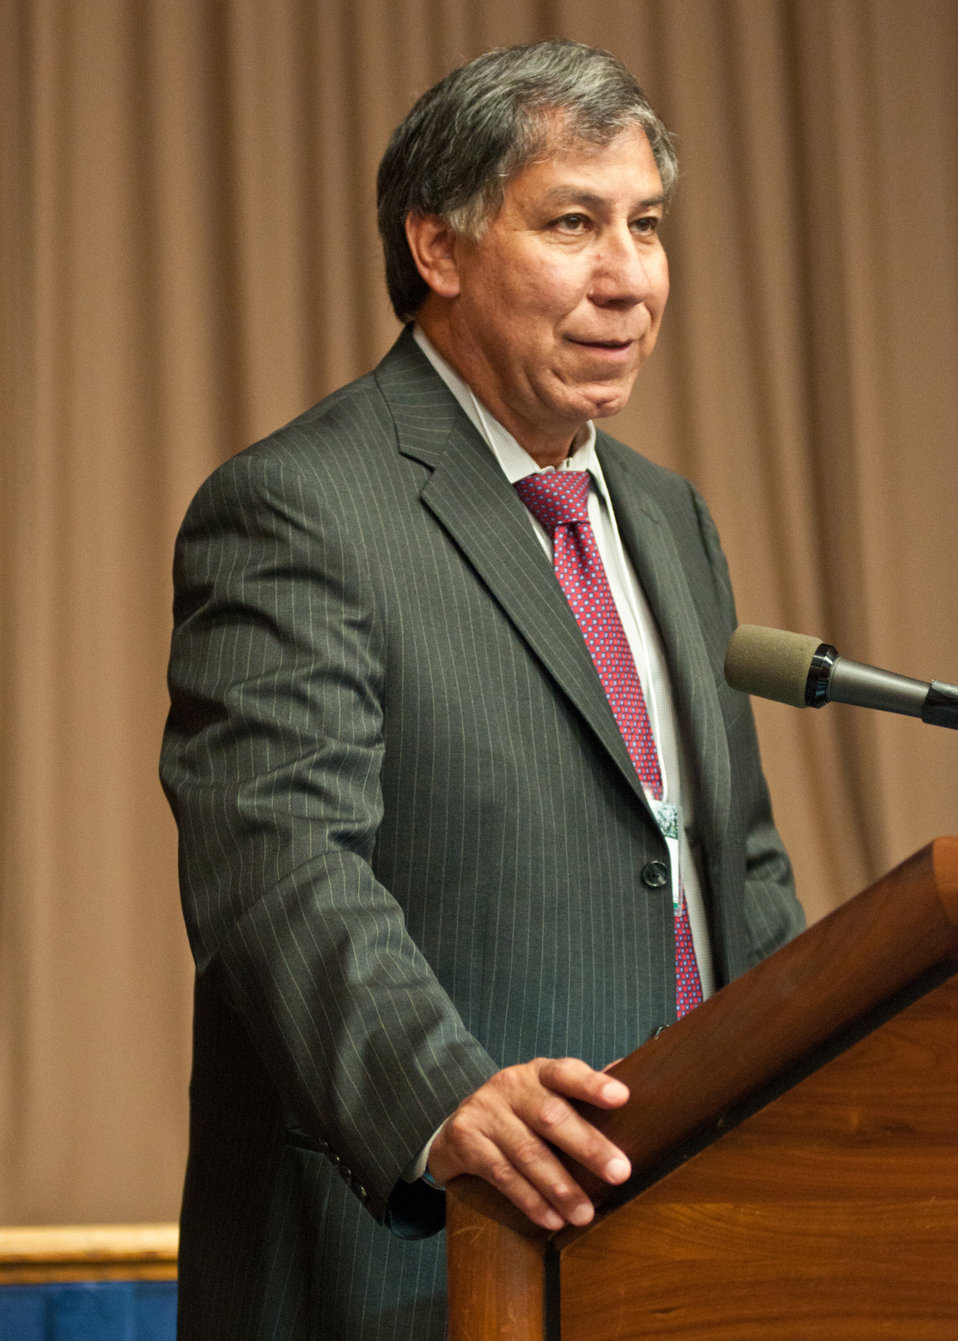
Ed Avalos, Undersecretary, Marketing and Regulatory Programs addresses stakeholders and members of the public during the USDA Activities and Priorities Related to Organic Agriculture and Markets Public Listening Session held at the U.S. Department of Agriculture, in Washington DC, Tuesday, September 20, 2011. The purpose of the event was to gain the perspective of stakeholders and members of the public, important tools to help USDA Programs examine and prioritize their activities and objectives in order to best serve the organic community.